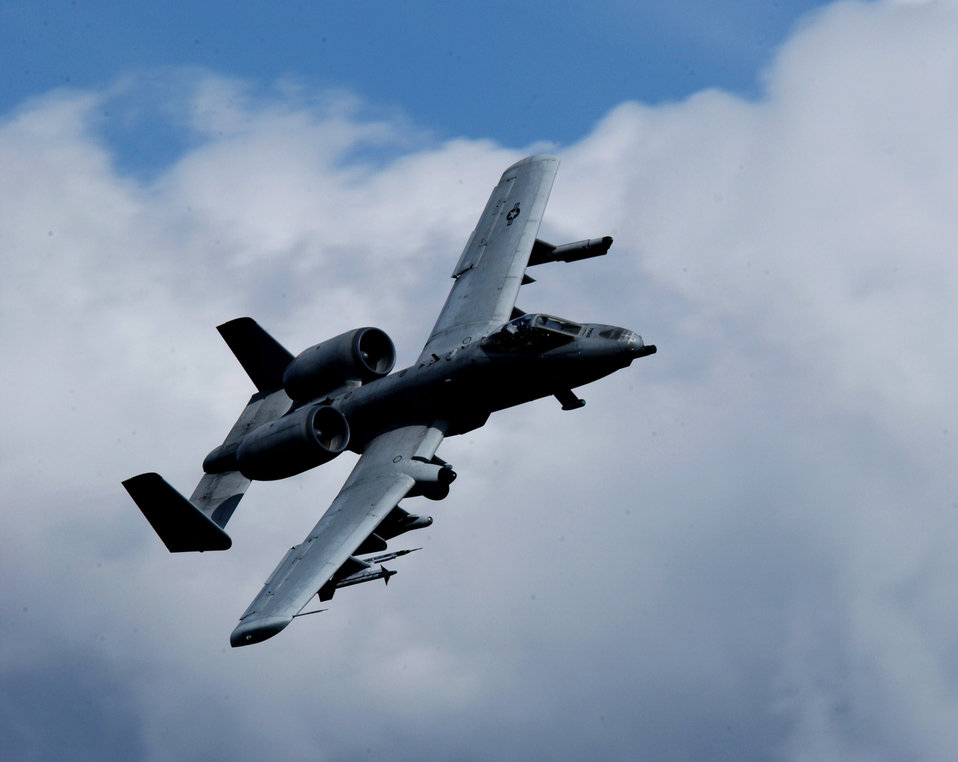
Air to ground power

An A-10 Thunderbolt II prepares for a strafing run May 29 on the Pacific Alaska Range Complex in Alaska. The A-10 is assigned to the 355th Fighter Squadron from Eielson Air Force Base, Alaska. The 355th FS is tasked to provide mission ready A-10s as well as search and rescue capability in Alaska and deployed sites worldwide.